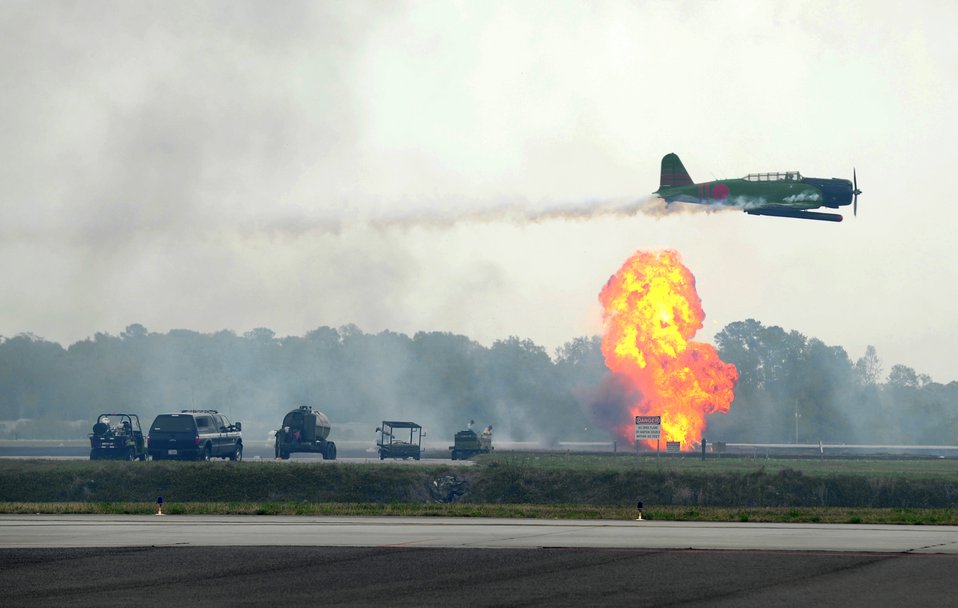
Thrilling the crowd

An aircraft demonstration team recreates the battle of Pearl Harbor April 9, 2011, during the Charleston Air Expo at Joint Base Charleston, S.C.